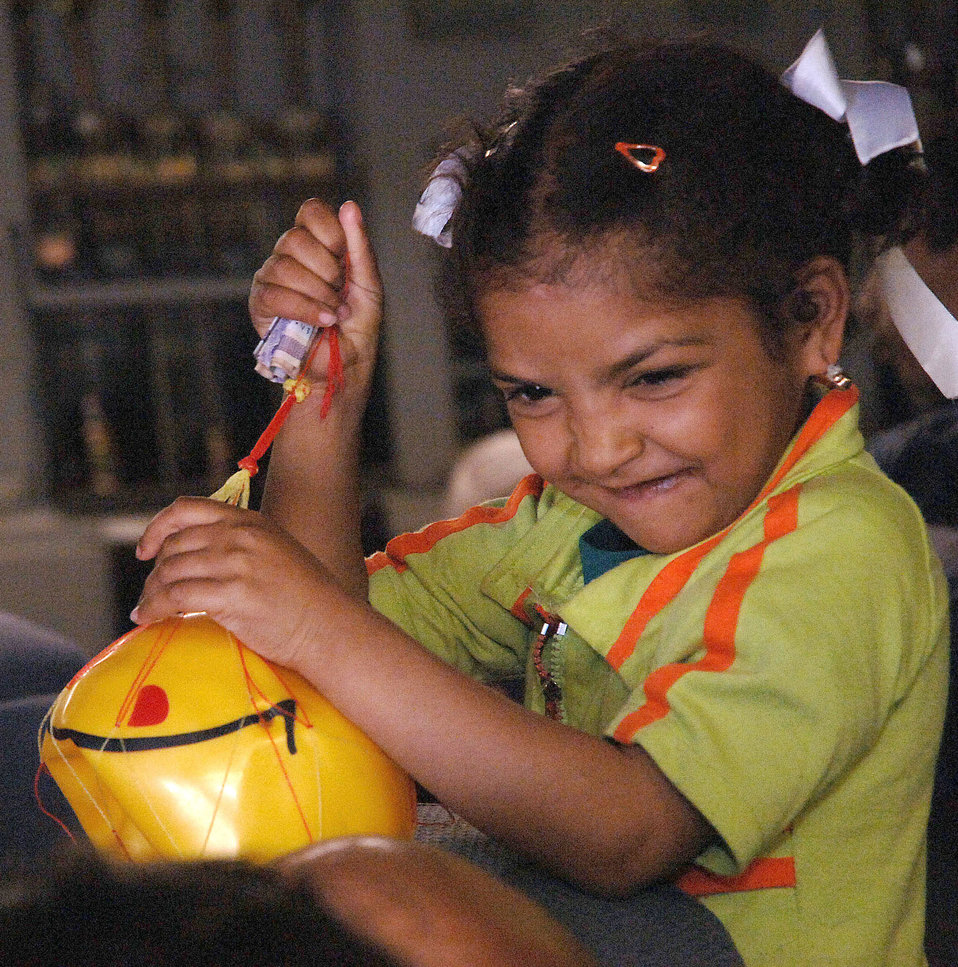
Operation Smile

An Iraqi girl plays aboard an Air Force C-17 Globemaster III at Baghdad International Airport, Iraq, on Saturday, April 29, 2006. She was one of more than 100 Iraqi children who received surgery in Amman, Jordan, thanks to Operation Smile, an organization that provides corrective surgery for cleft palates and cleft lips. The children were flown back to Iraq on the C-17.